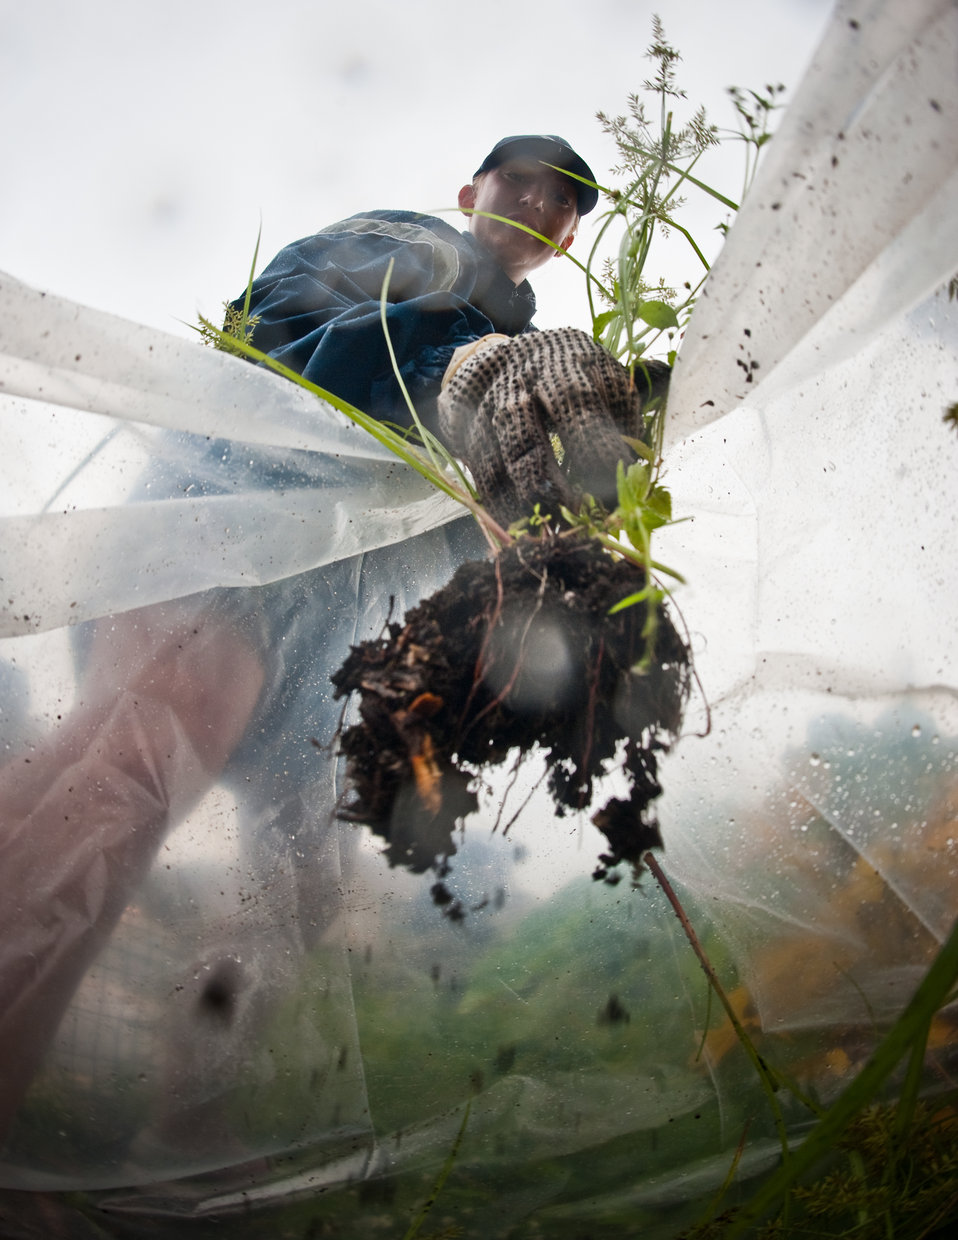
Air Force Week - Volunteer Day

Senior Airman Jordan Dalbenzio and 33 other Airmen did not let constant rain stop them from participating in the in the cleanup of the Grand Army Plaza in Prospect Park, as part of Air Force Week New York's Volunteer Day Aug. 25, 2010, in Brooklyn, N.Y. Airman Dalbenzio is assigned to the command post of the 108th Contingency Response Group, with the New Jersey Air National Guard at Joint Base McGuire-Dix-Lakehurst, N.J.